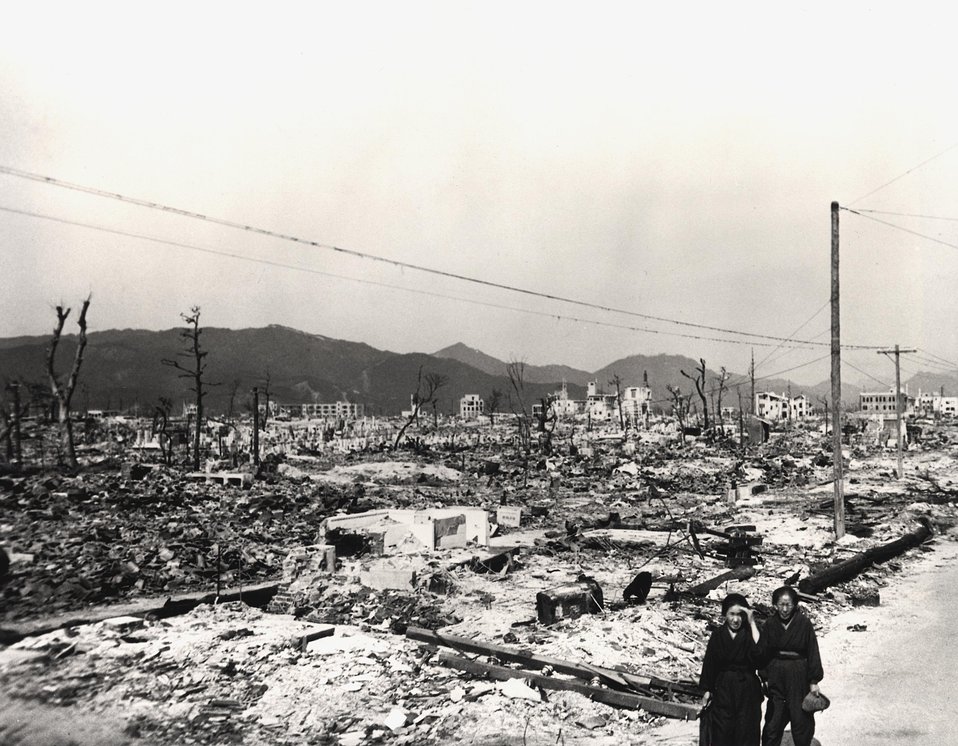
Atomic bomb damage Hiroshima, Japan seen by the USS Appalachian November 27, 1945.